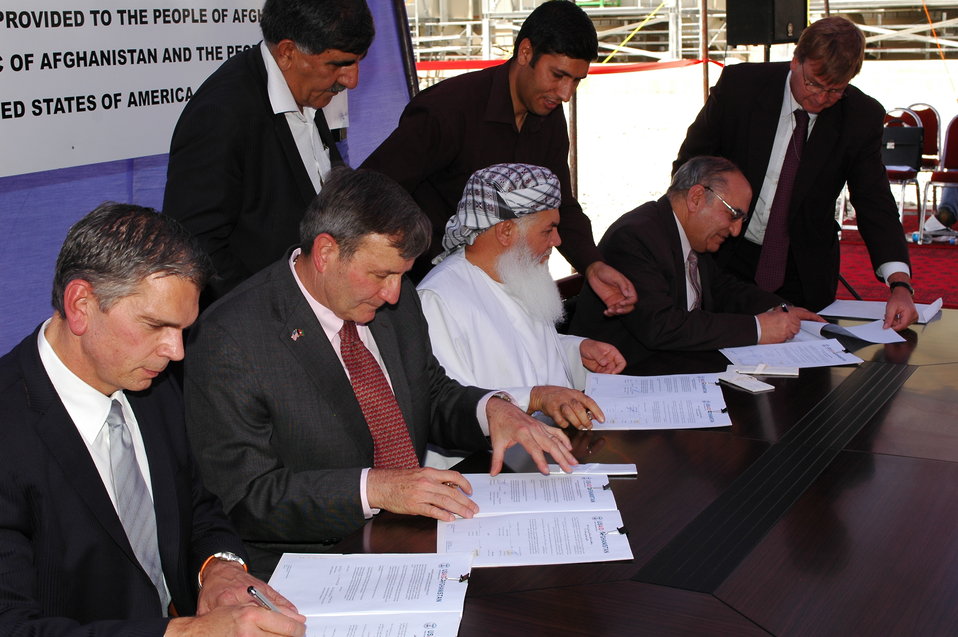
د طره خیلو بریښنا فابریکه د افغانستان حکومت ته وسپارل شوه